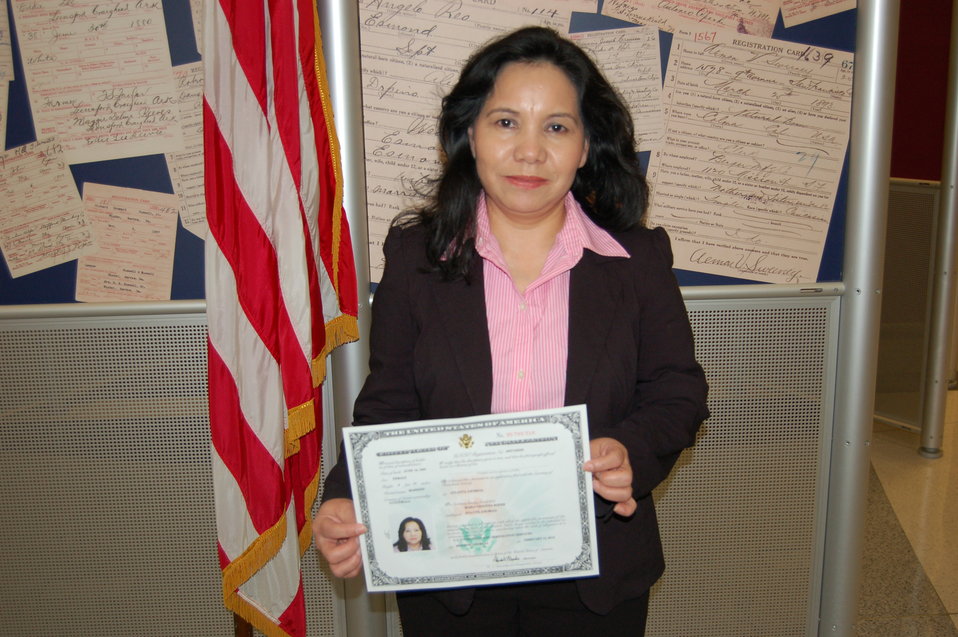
New Citizens